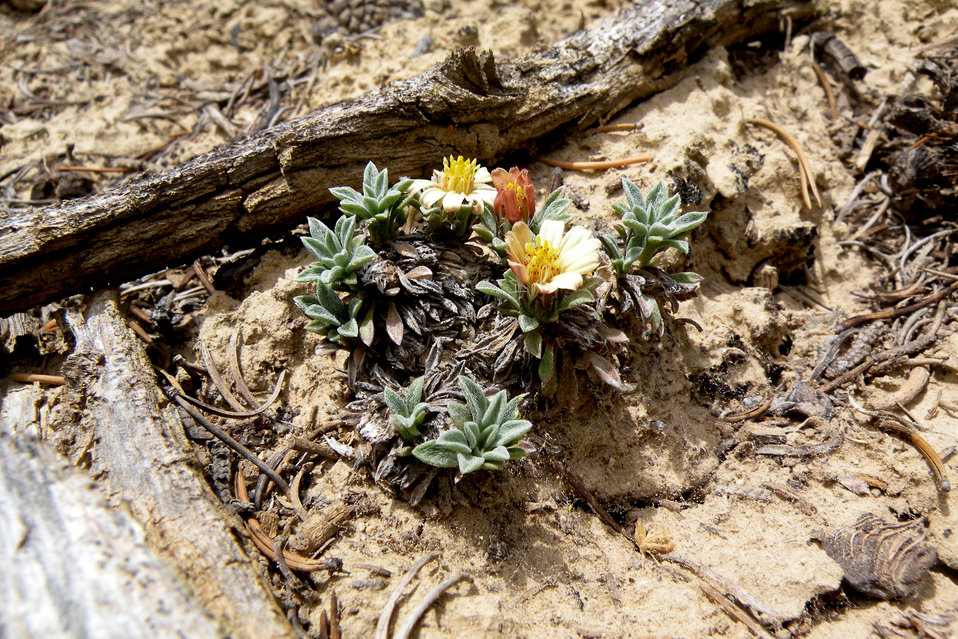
Last Chance townsendia (Townsendia aprica) is a diminutive perennial herb in the sunflower family. It is endemic to central Utah where it occurs in Emery, Sevier, and Wayne counties. The species is associated with piñon-juniper and grassland communities between 6,100 and 8,000 feet in elevation. Habitat loss, degradation, and fragmentation are the largest threats this species faces today. Sources of these threats include coal mining, road developments, recreational off-road vehicle use, and grazing. It was listed threatened in 1985.